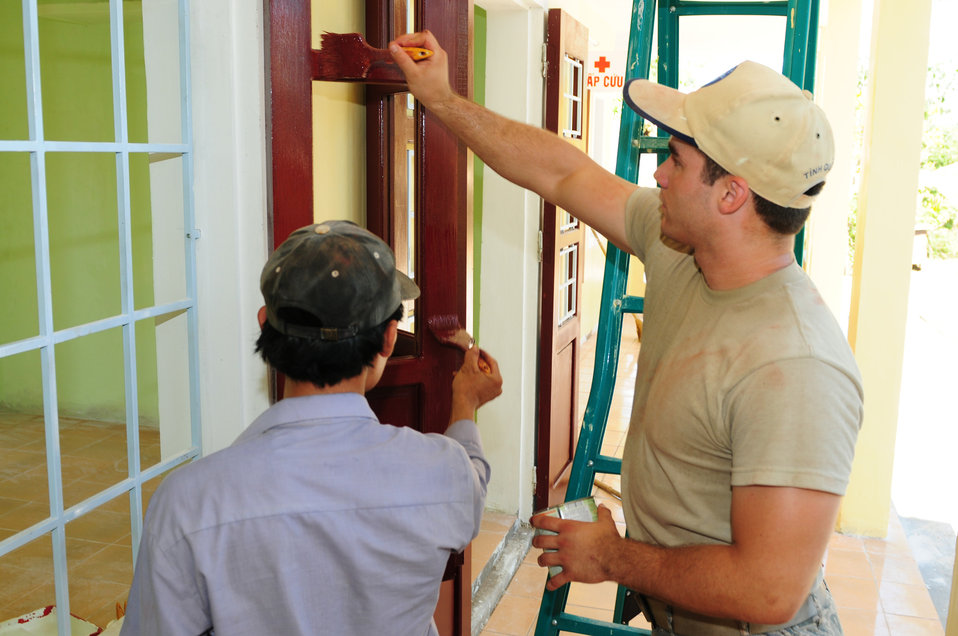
Airmen restore Vietnamese clinic during Pacific Angel

Airman 1st Class Lloyd Mosher joins a local Vietnamese man in painting the exterior doors of the Cam Thuy Medical Clinic Sept. 18, 2009 in Quang Tri Province, Vietnam. Airman Mosher and other Airmen are participating in Operation Pacific Angel 2009 Sept. 15 to 24 to provide humanitarian assistance in cooperation with local authorities to Quang Tri Province residents. Pacific Angel is a Pacific Air Forces operation led by 13th Air Force at Hickam Air Force Base, Hawaii. The joint and combined humanitarian assistance operation is conducted in the Pacific area of responsibility to support U.S. Pacific Command's capacity-building efforts. Airman Mosher is a civil engineer technician from Elmendorf Air Force Base, Alaska,